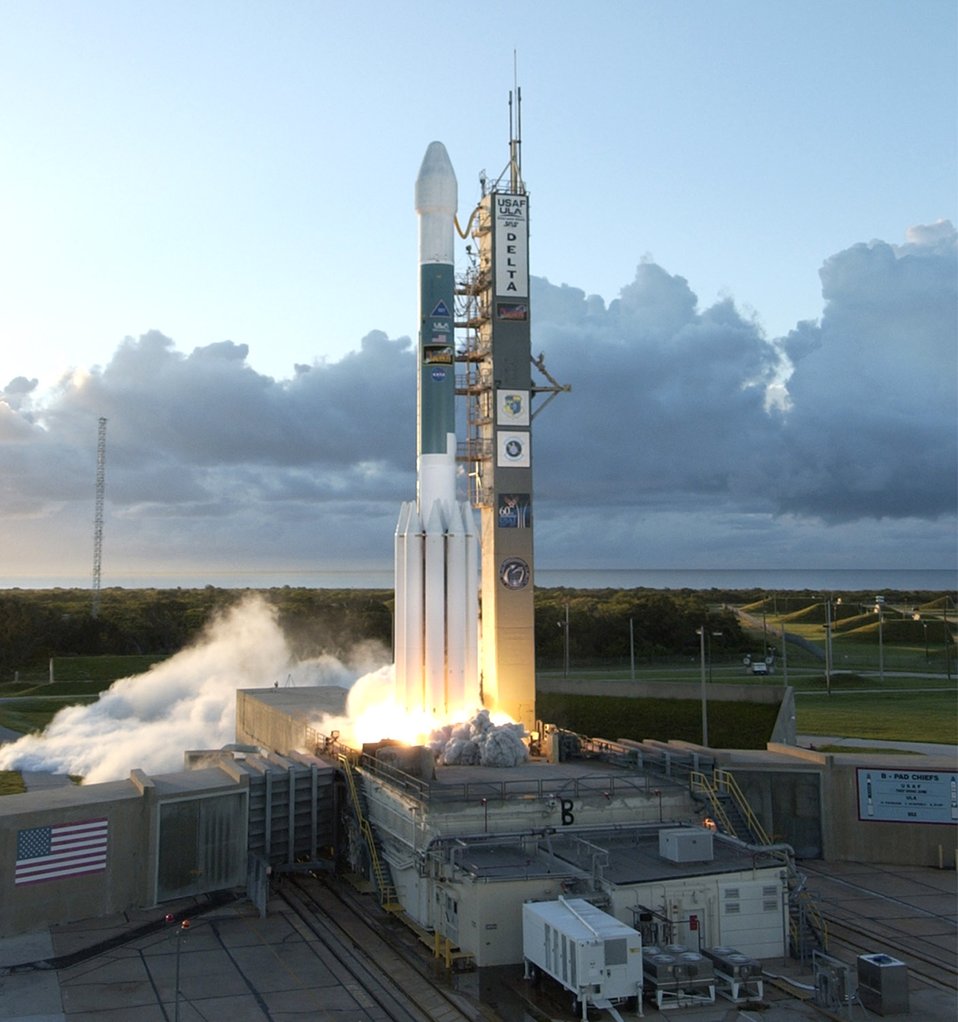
Blast off

A Delta II booster blasts off from Space Launch Complex 17-B at Cape Canaveral Air Force Station, Fla. carrying NASA's Dawn probe into space.